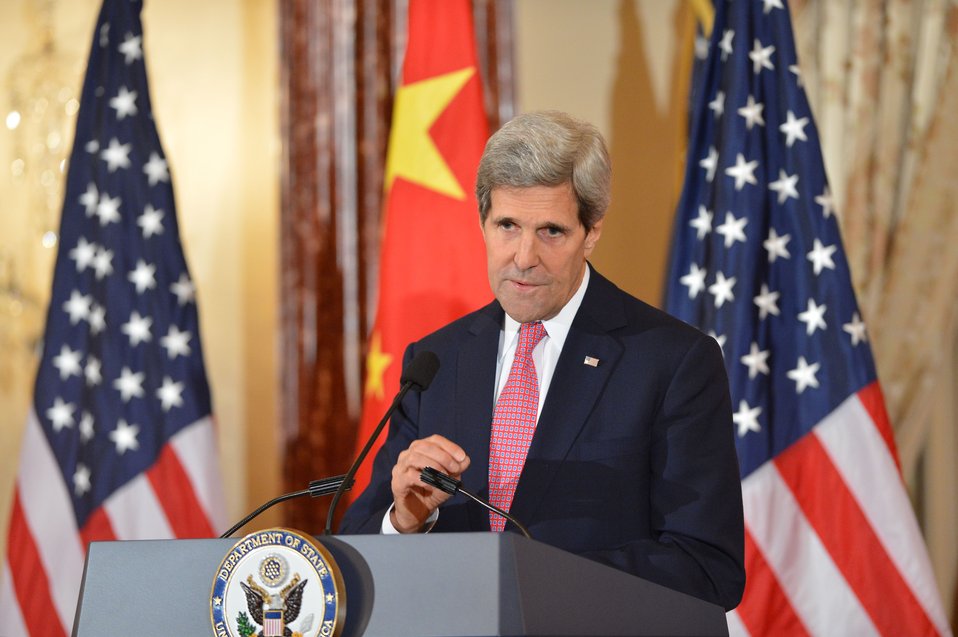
Secretary Kerry Delivers Remarks at the U.S.-China High-Level Consultation on People-to-People Exchange

U.S. Secretary of State John Kerry delivers remarks the Closing Session of the 2013 U.S.-China High-Level Consultation on People-to-People Exchange at the U.S. Department of State in Washington, D.C., on November 21, 2013.